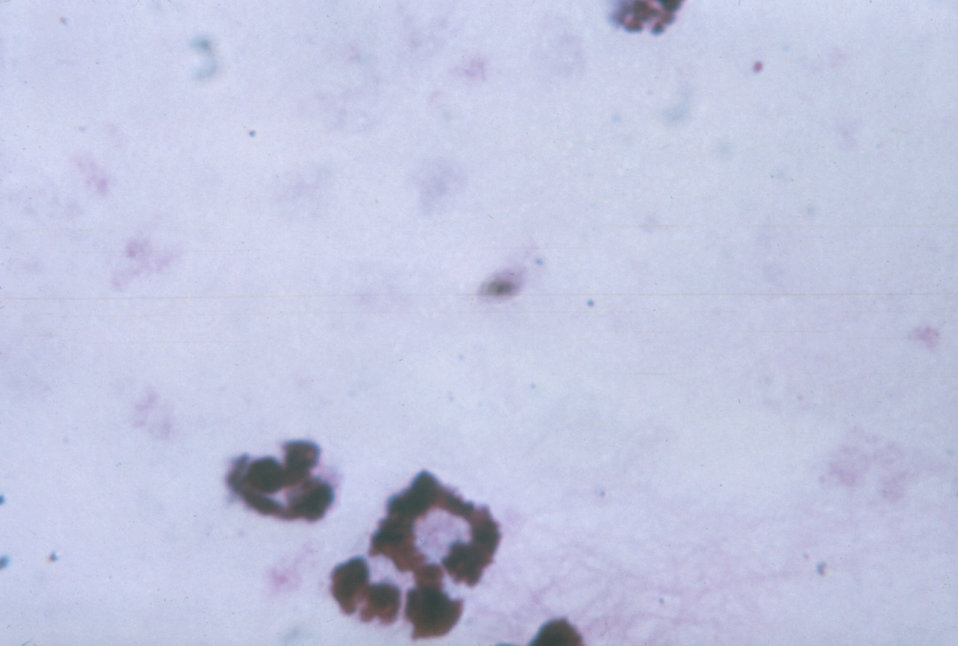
This thick film photomicrograph shows a Plasmodium falciparum gametocyte with both cytoplasm and pigment evident.